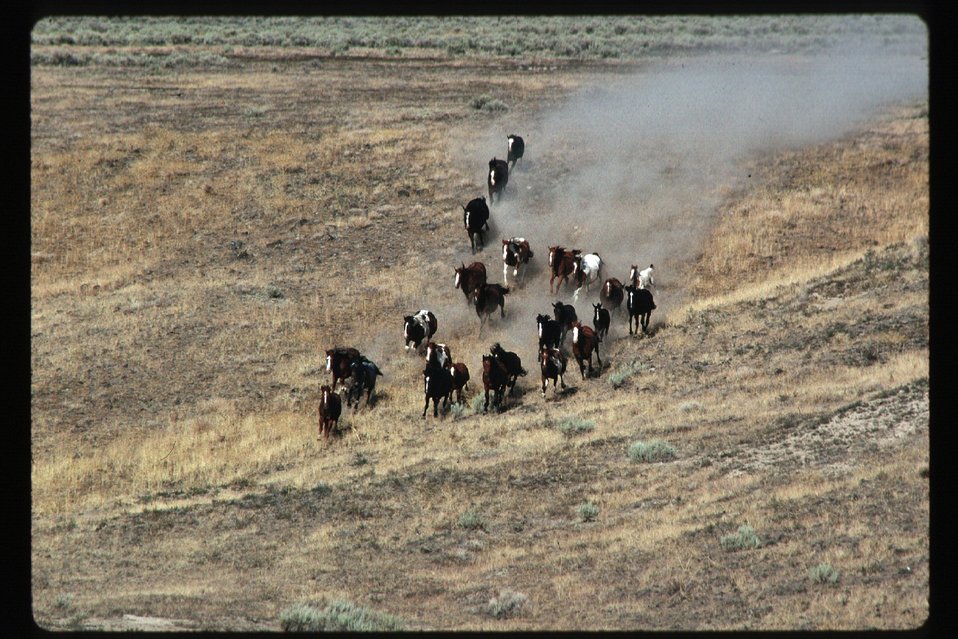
Wild horse roundup Wild Horse and Burro Adoption Program LSRD Lower Snake River District